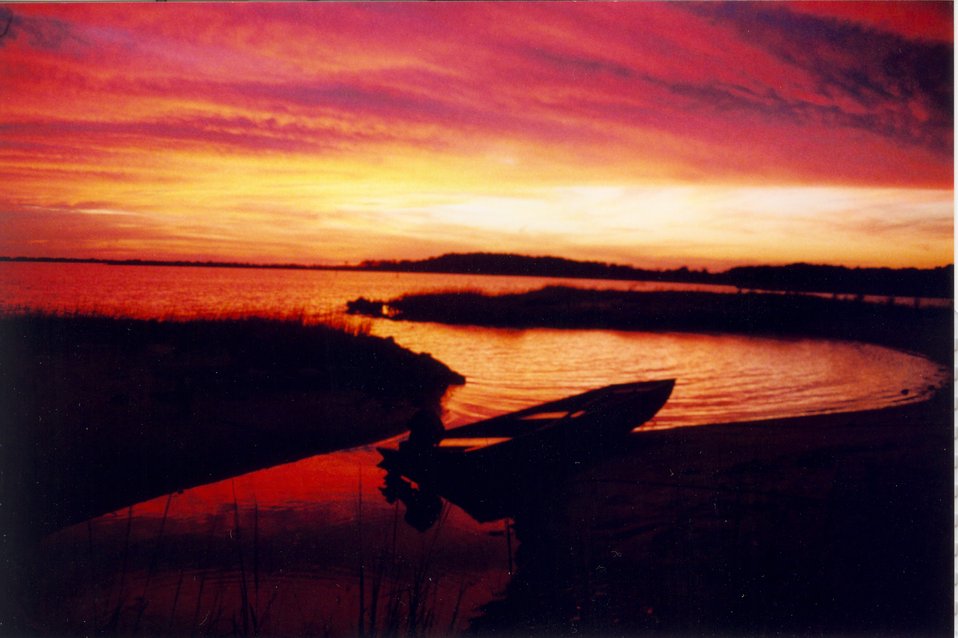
Orange Halloween sunset.